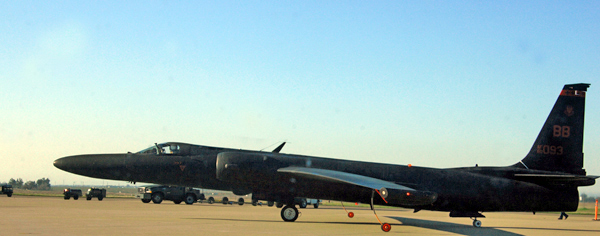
U-2 Dragon Lady

A U-2 Dragon Lady prepares for take-off before a high-flight. The U-2 is capable of flying at altitudes up to 70,000 feet.